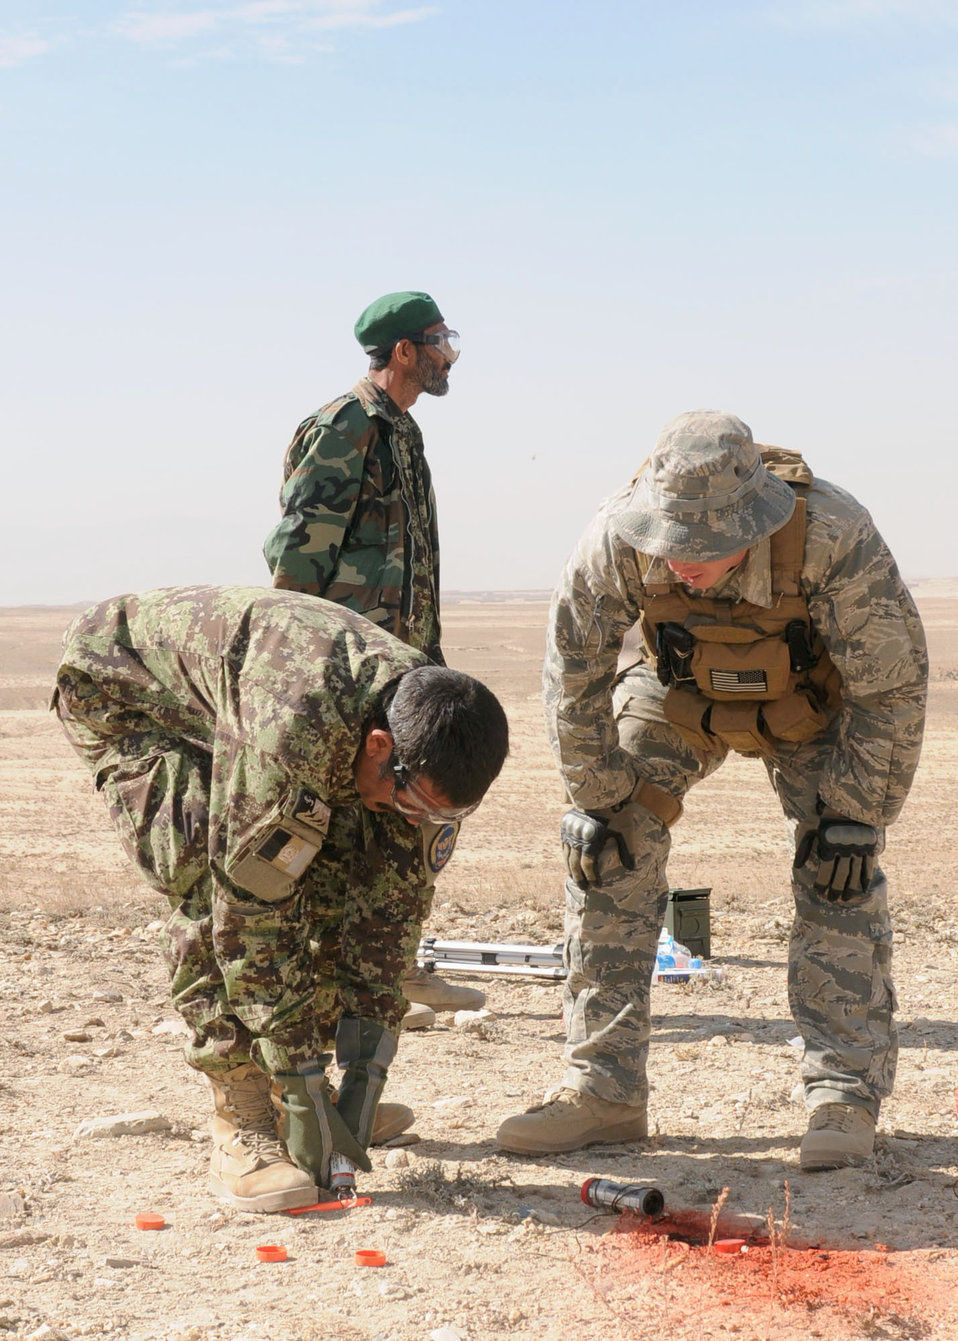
Signal training

Afghan life support airmen practice using signaling devices. They will begin teaching this skill to Afghan air force pilots so they know how to signal for rescue.